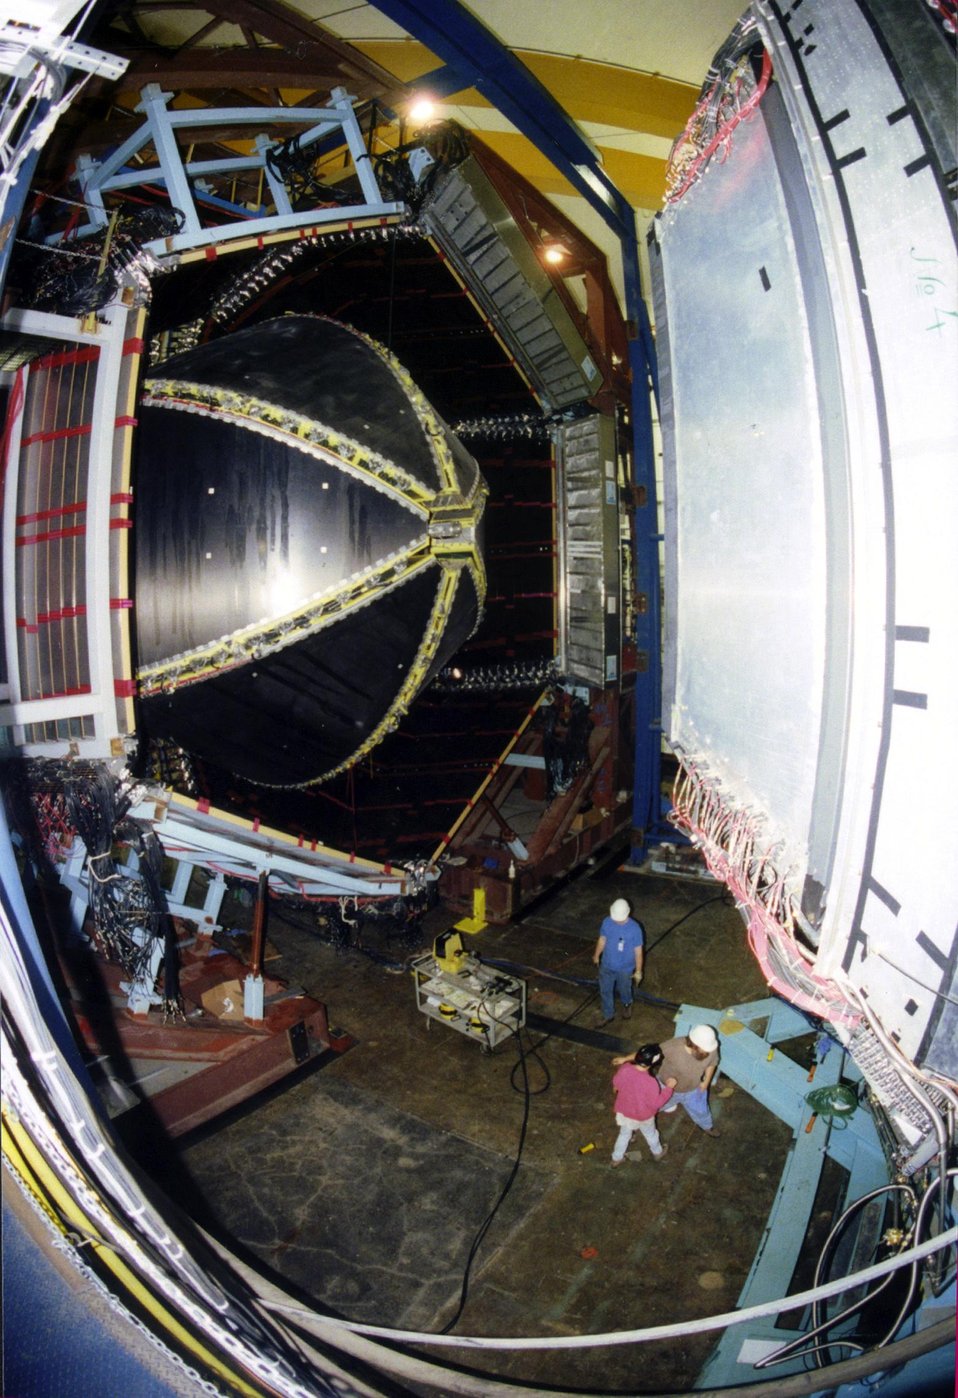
WIDE ANGLE VIEW OF THE REGION 3 DRIFT CHAMBERS INSIDE THE CLAM SHELL OF HALL B.

THE JEFFERSON LAB IS BUILT FOR NUCLEAR PHYSICS RESEARCH. SCIENTISTS USE SUPERCONDUCTING ELECTRON ACCELERATING TECHNOLOGY AT THE LAB'S CONTINUOUS ELECTRON BEAM ACCELERATOR (CEBAF) TO CONDUCT EXPERIMENTS. HIGH ENERGY ELECTRON BEAMS FROM THE ACCELERATOR ALLOWS SCIENTISTS TO PROBE THE ATOM'S NUCLEUS, REVEALING HOW QUARKS MAKE UP PROTONS, NEUTRONS, AND THE NUCLEUS ITSELF.